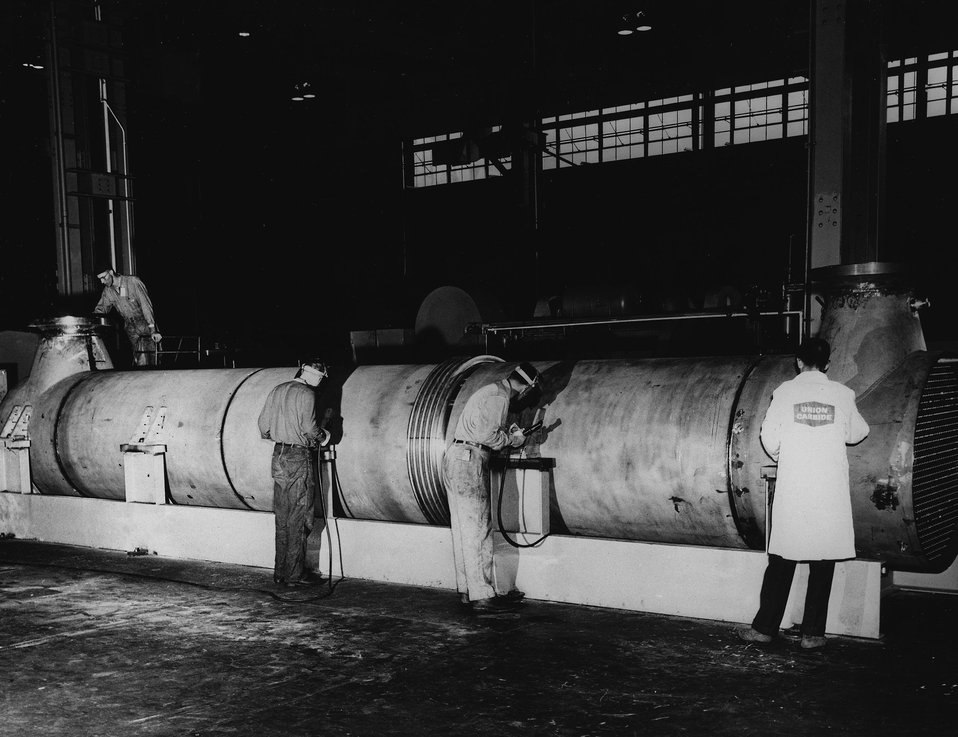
A stainless steel heat exchanger capable of elevating the temperature of air to 1200 degrees F. wil be used in the development of a combuster for the supersonic air transport ship. c. 1967